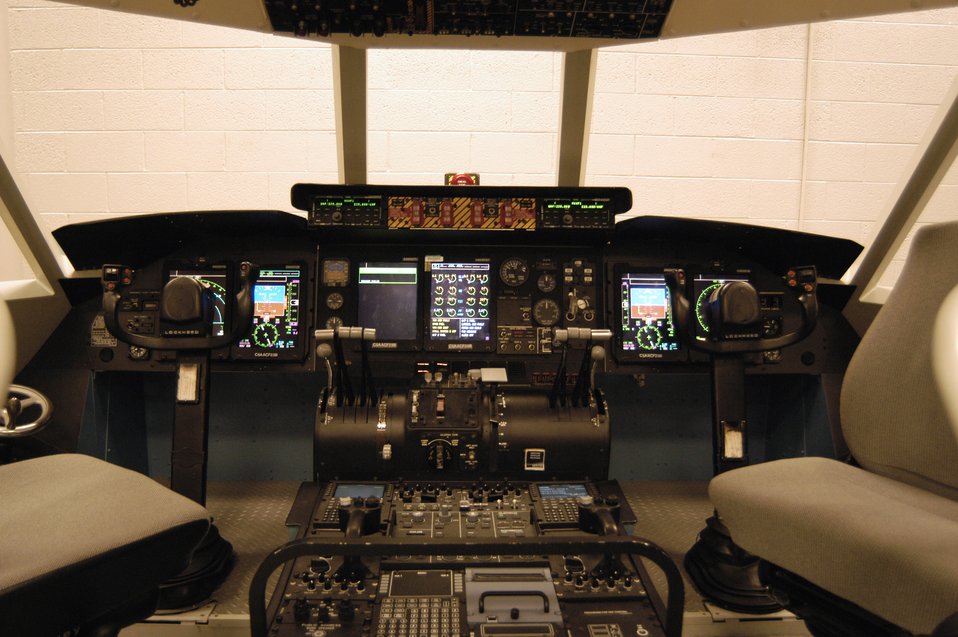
Dover AFB receives new maintenance trainer

A full-scale model of a C-5 Galaxy cockpit, called a combined avionics systems trainer, or CAST, will be used by instructors at Dover Air Force Base, Del., to help train maintainers who will fix avionics systems on the C-5. The trainer comprises five separate sections including a forward cockpit station, navigator station, an aircraft silhouette, an avionics station and an instructor station.